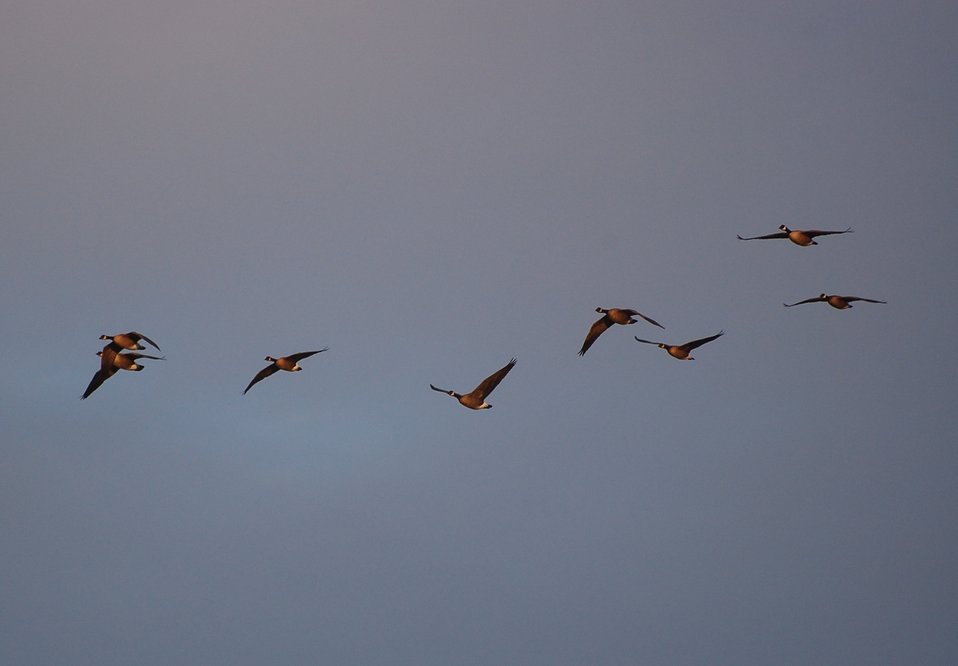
Cackling geese at Izembek Lagoon

Izembek National Wildlife Refuge